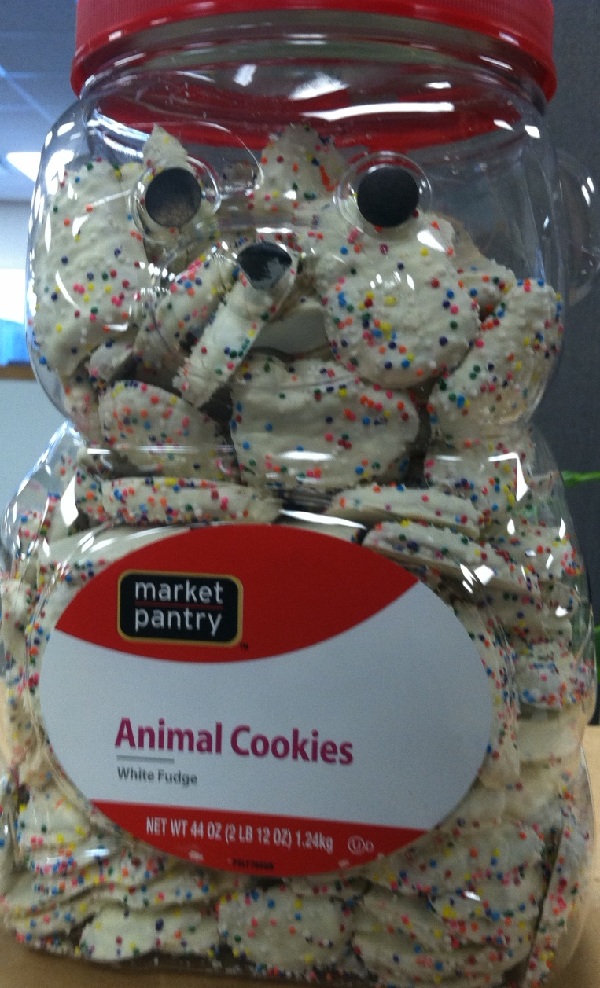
RECALLED – D.F. Stauffer Biscuit Co., Inc. Animal Cookies

October 4, 2013 – Product Recall – D.F. Stauffer Biscuit Co., Inc. Issues Allergy Alert and Voluntary Recall on 44 oz. Market Pantry White Fudge Coated Animal Cookies Due to Mislabeling and Undeclared Allergens.